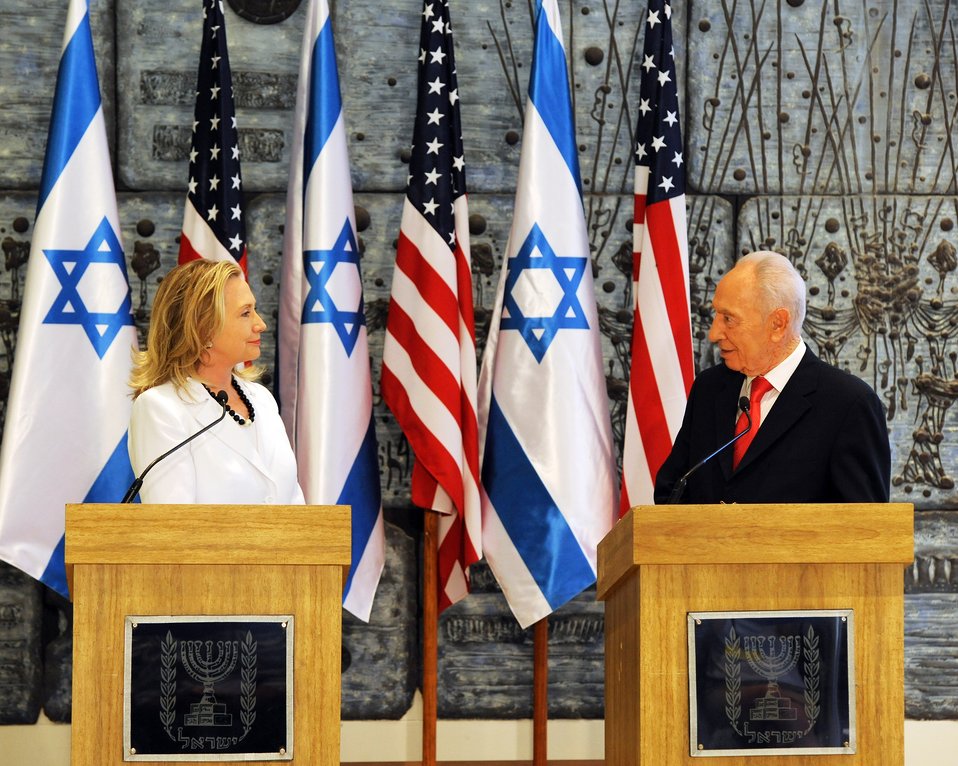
Secretary Clinton With Israeli President Peres

U.S. Secretary of State Hillary Rodham Clinton holds a joint press conference with Israeli President Shimon Peres in Jerusalem on July 16, 2012.